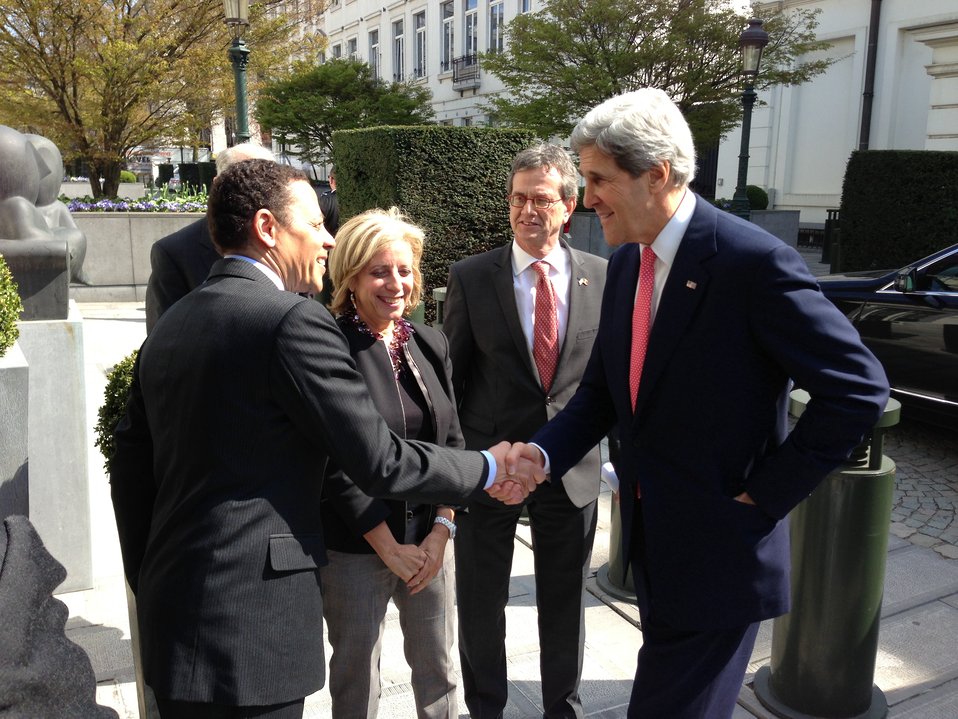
Secretary Kerry Is Greeted Ambassador Kennard

U.S. Secretary of State John Kerry is greeted by U.S. Ambassador to the European Union William E. Kennard as U.S. Ambassador to the Kingdom of Belgium Howard Gutman and his wife look on in Brussels, Belgium, April 22, 2013.